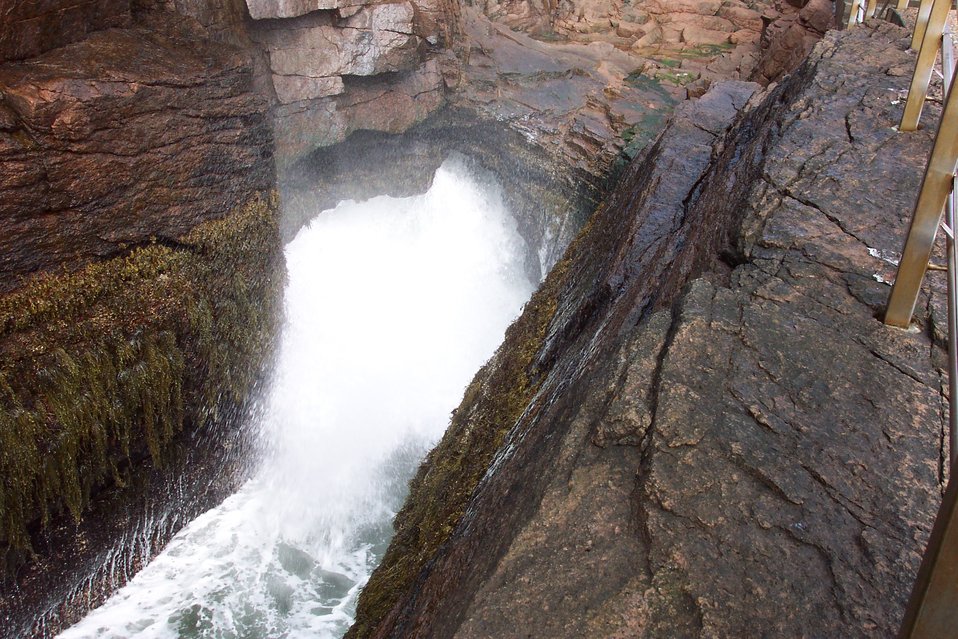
Thunder Hole, spray, water and thunderous sounds following the crash of a North Atlantic swell.